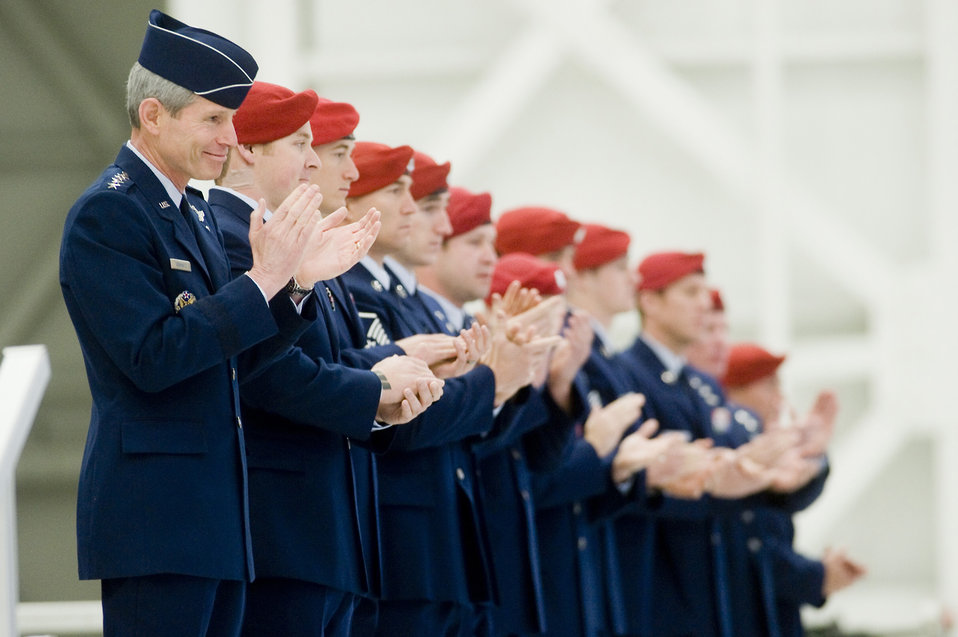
Combat controllers contributions honored in ceremony

Air Force Chief of Staff Gen. Norton Schwartz and combat controllers from the 22nd Special Tactics Squadron take a moment to recognize retired Col. Joe Jackson at an medal ceremony honoring the Airmen April 29, 2010, at Joint Base Lewis-McChord, Wash. General Schwartz visited the base to present 13 medals to 11 combat controllers. Colonel Jackson was awarded the Medal of Honor for his actions in Vietnam in 1968, when he risked his life to ensure no combat controllers were left
behind.